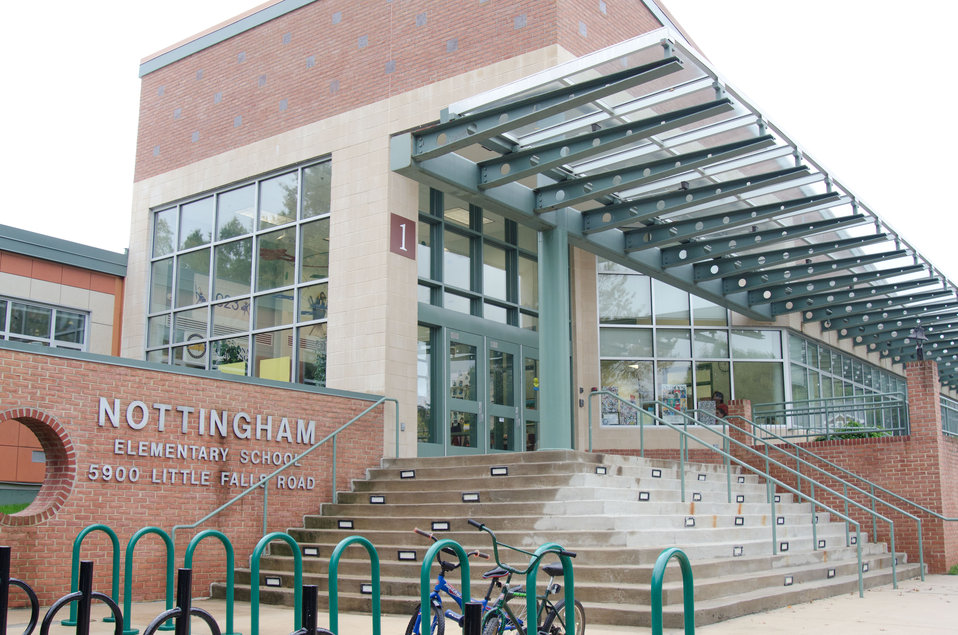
Nottingham Elementary School in Arlington, VA, on Wednesday, October 12, 2011.